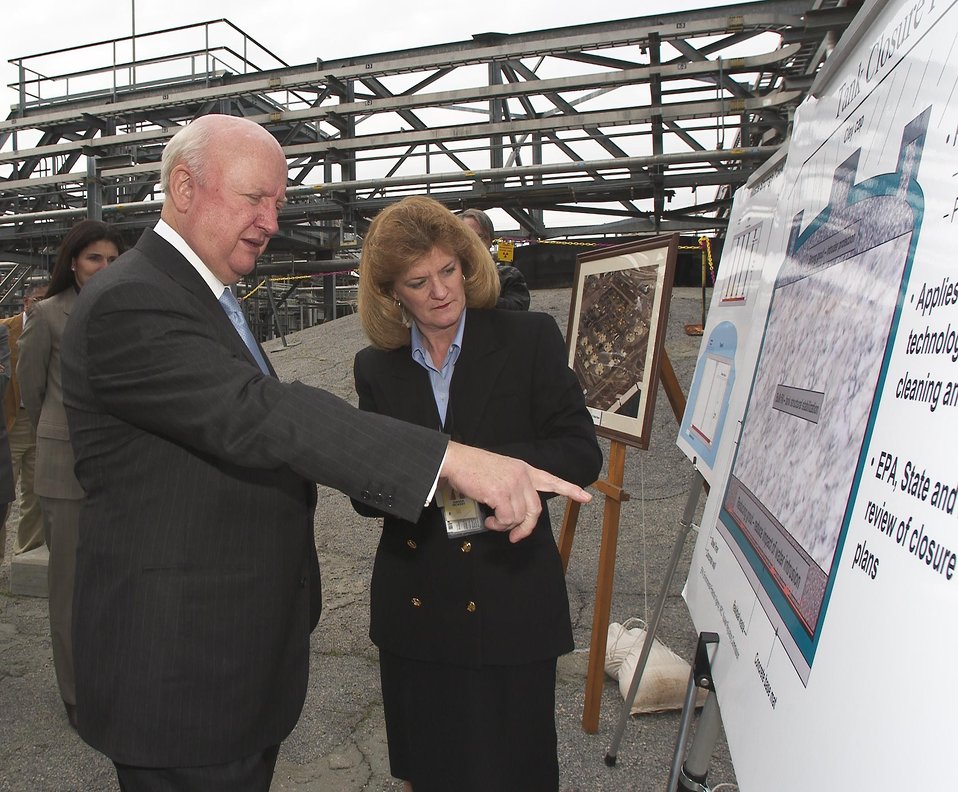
SECRETARY OF ENERGY BODMAN VISITING CONTROL ROOM AT THE DEFENSE WASTE PROCESSING FACILITY.

THE SAVANNAH RIVER SITE'S DEFENSE WASTE PROCESSING FACILITY NEAR AIKEN, S.C., IS THE WORLD'S LARGEST RADIOACTIVE WASTE VITRIFICATION FACILITY. THE PURPOSE OF DWPF IS TO IMMOBILIZE APPROXIMATELY 37 MILLION GALLONS OF HIGH LEVEL RADIOACTIVE WASTE FROM UNDERGROUND TANKS AT THE SRS. THE HIGH LEVEL WASTE IS VITRIFIED INTO A DURABLE BOROSILICATE GLASS, POURED INTO STAINLESS STEEL CANISTERS AND STORED PRIOR TO EVENTUAL DISPOSAL IN A GEOLOGIC REPOSITORY.